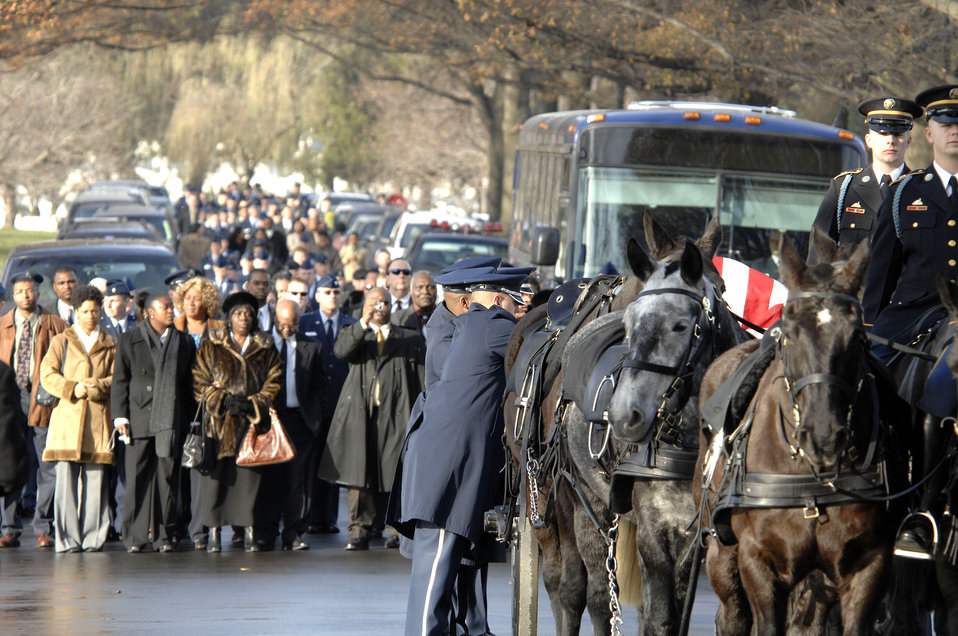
One final salute

More than 200 friends and relatives gathered to pay their respects to Capt. Kermit Evans Dec. 12 at Arlington National Cemetery . Capt Evans was a member of the 27th Civil Engineering Squadron Explosives Ordnance Disposal Flight at Cannon Air Force Base, N.M. He was deployed to Iraq when the helicopter he was a passenger in made an emergency landing and crashed. He was one of the four out of 16 who were killed as a result of the crash. He is srvived by his wife, Perneatha, and Kermit Jr., their 13-month-old son.